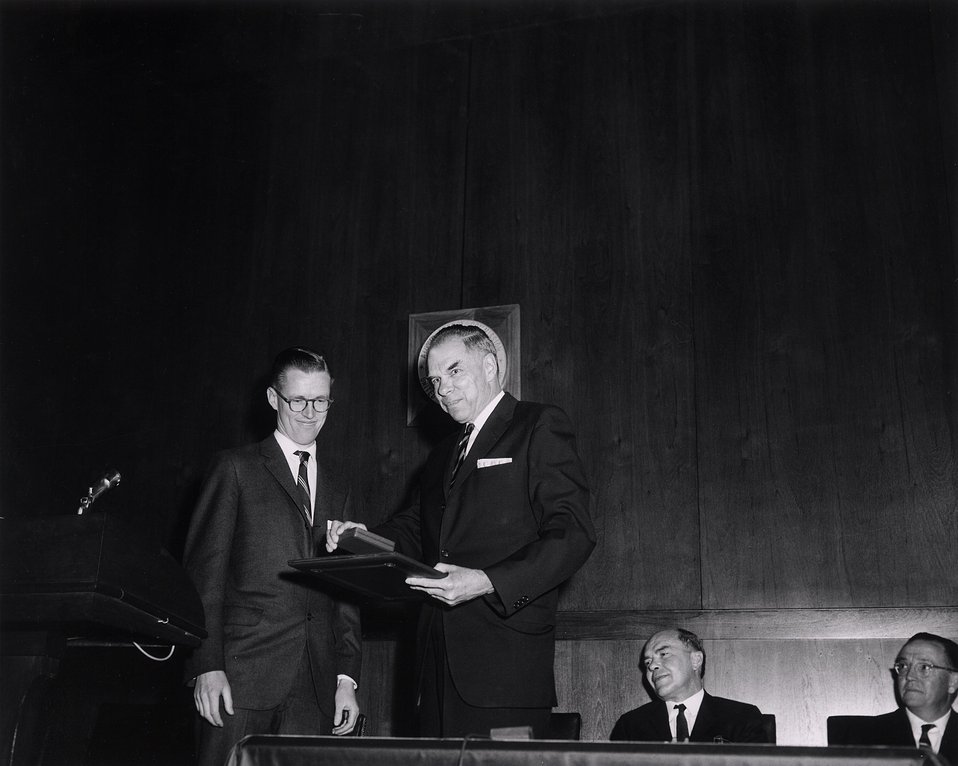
E.O. Lawrence Awards, 1967. Carnegie Institution Auditorium. April 27, 1967. L- Dr. John O. Rasmussen. R- Chairman Seaborg.